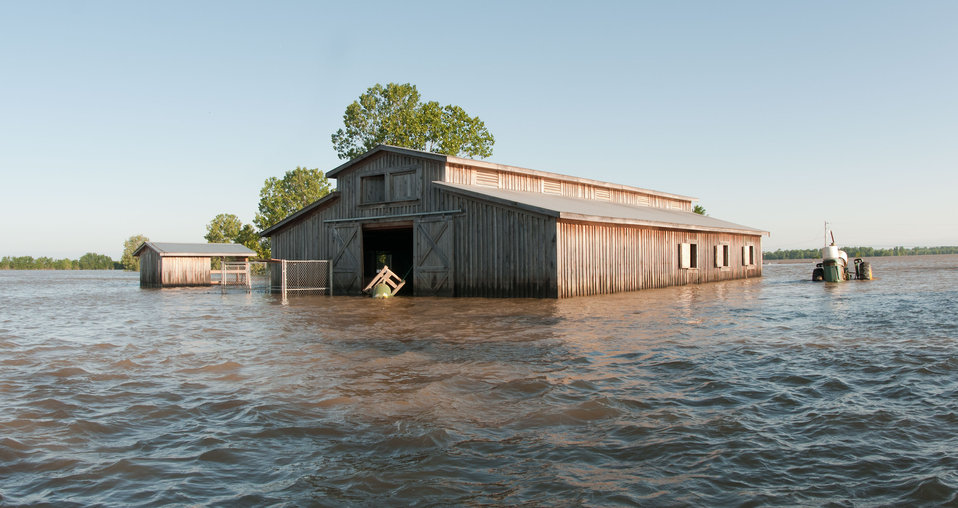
An old tractor, compressor tank and hen house outside the barn Joe Higdon built on his ranch in the middle of President's Island. Floodwaters from the Mississippi River still cover the island with 6-12 feet of water on President’s Island near Memphis, TN on Sunday, May 15. 2011.